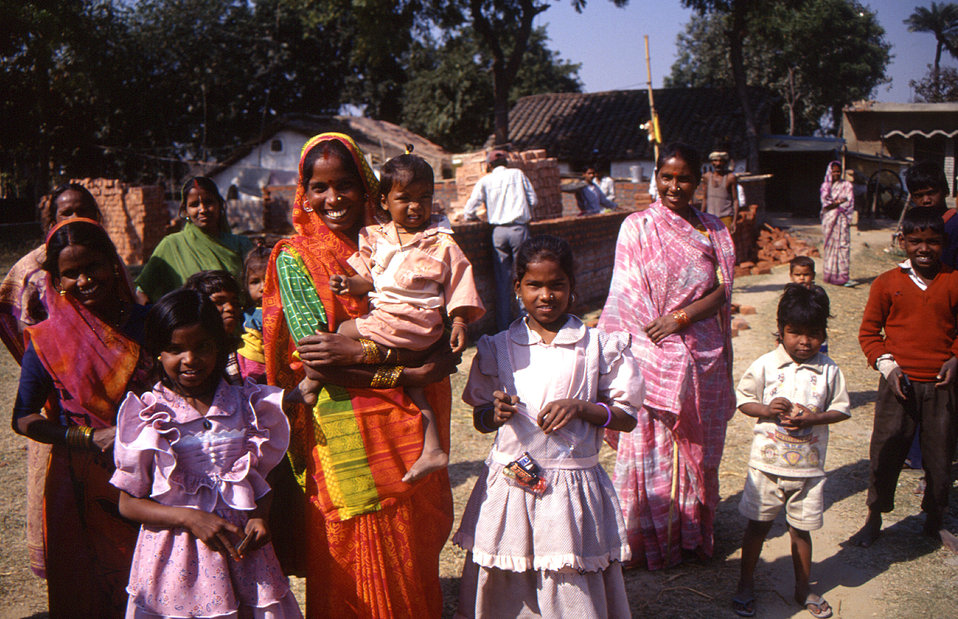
This 2000 photograph depicted a group of women and children in Gorakhpur, India. Provided by Chris Zahniser, B.S.N., R.N., M.P.H., a STOP Transmission of Polio (STOP) immunization initiative team member and photographer. Ms. Zahniser was at the time assigned to the state of Uttar Pradesh in northern India, and spent three months working in the Districts of Gorakhpur and Deoria.